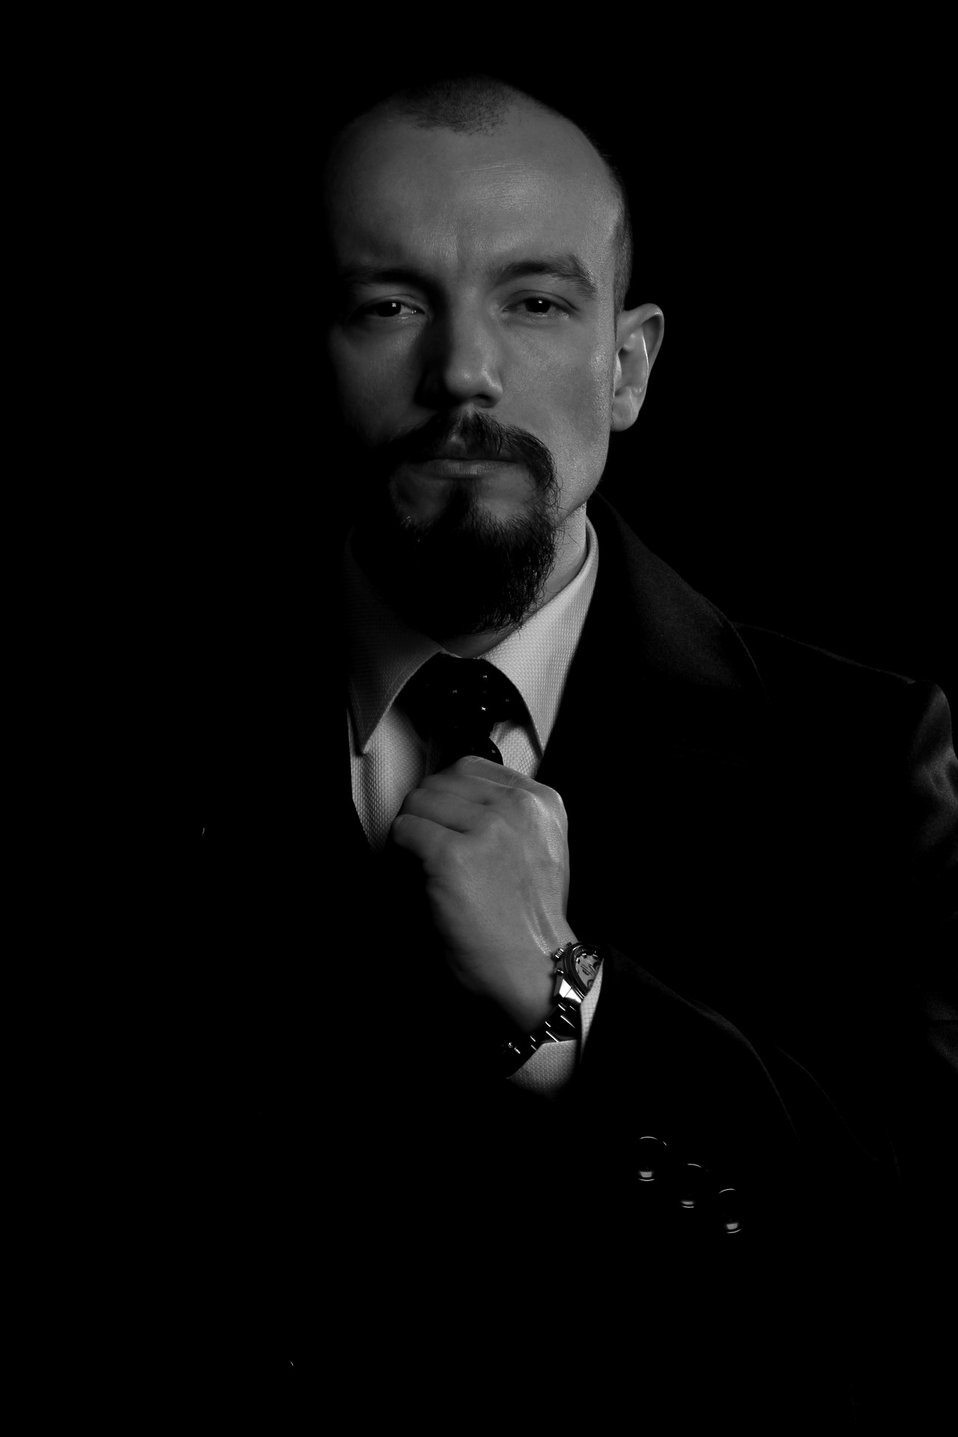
Pattberg - language & empire

World global thinkers.